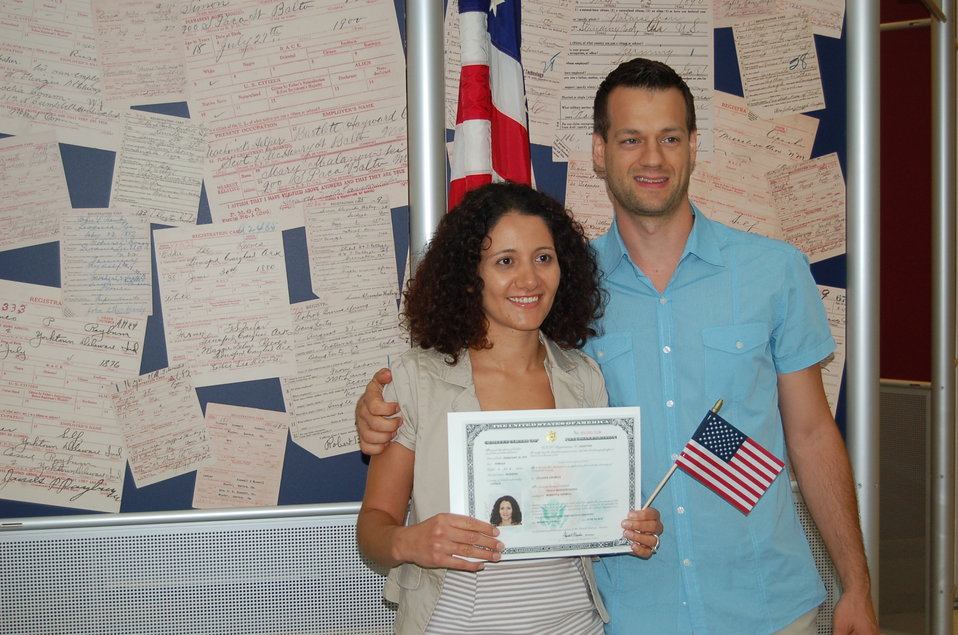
New Citizens